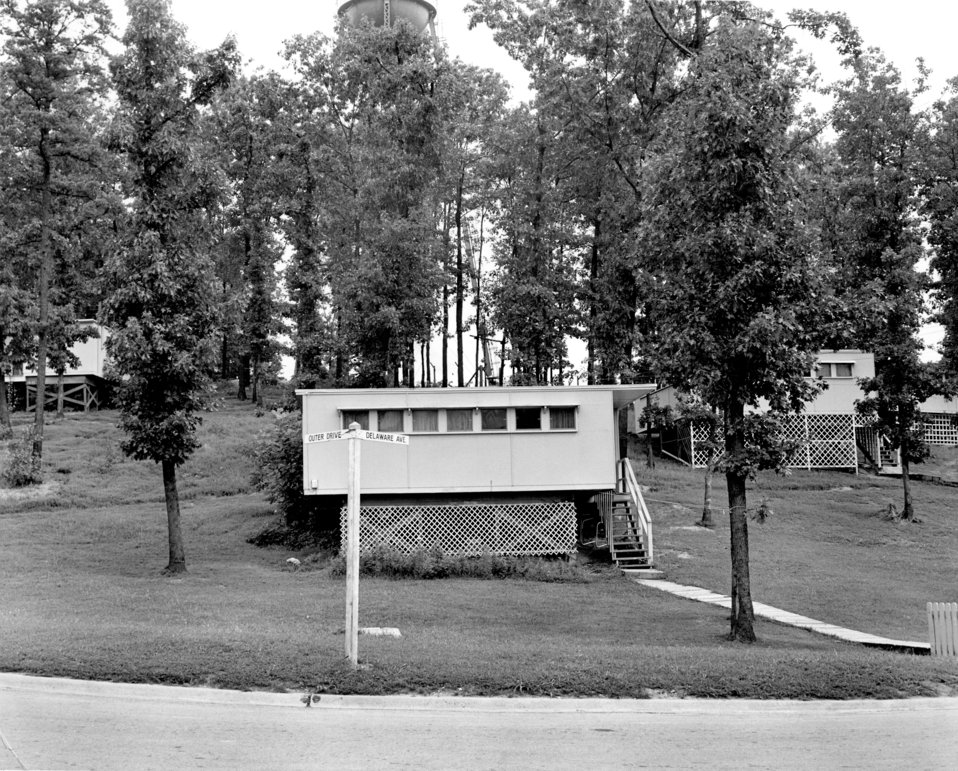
Prefab House Del. Ave 1948 Oak Ridge

5181 DOE photo Ed Westcott 8-16-1948 Oak Ridge Tennessee